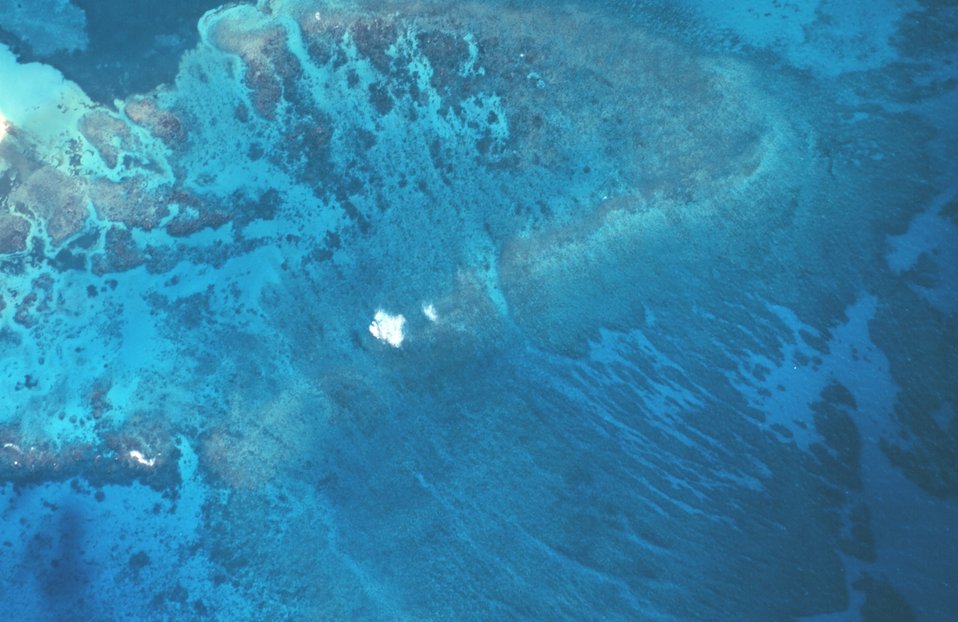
Aerial view of patterns in a coral reef.